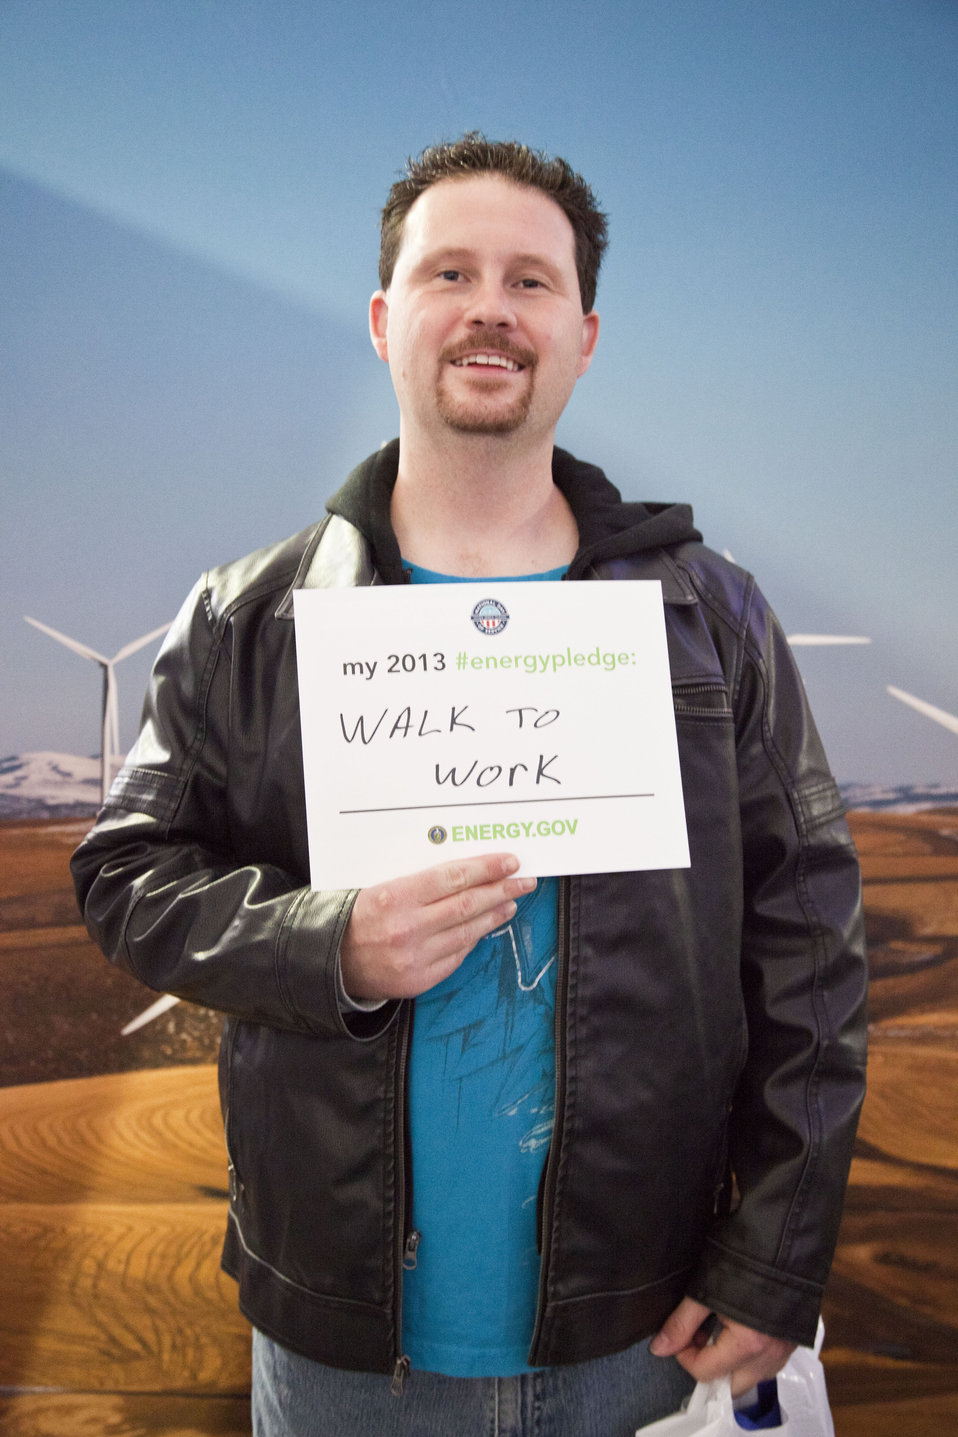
What's your #energypledge?